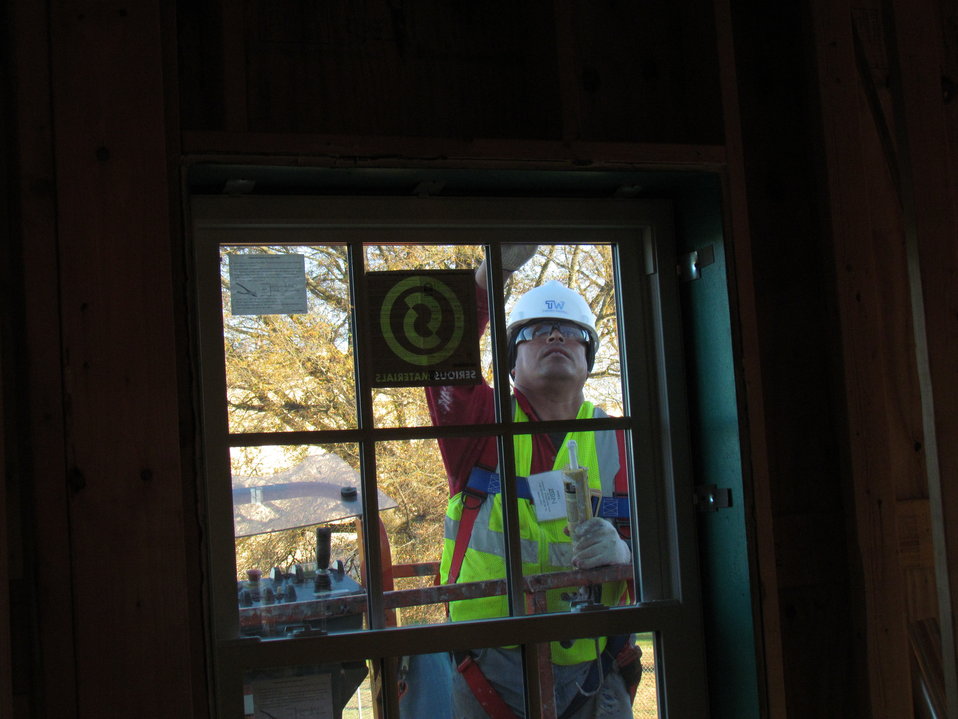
Net-Zero Energy Residential Test Facility – Worker installing final exterior caulking around window on east side of facility.